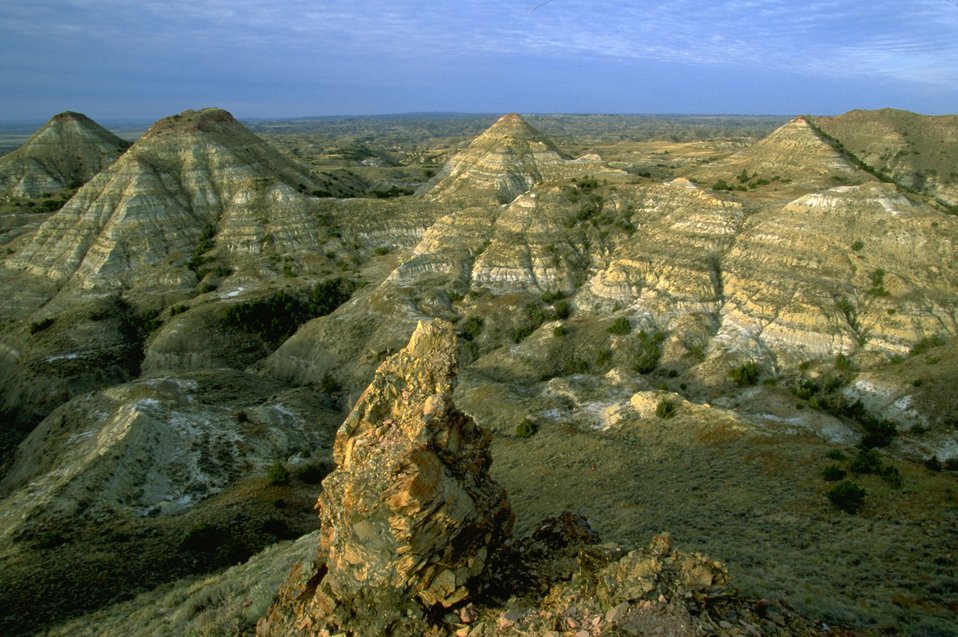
Terry Badlands Wilderness Study Area